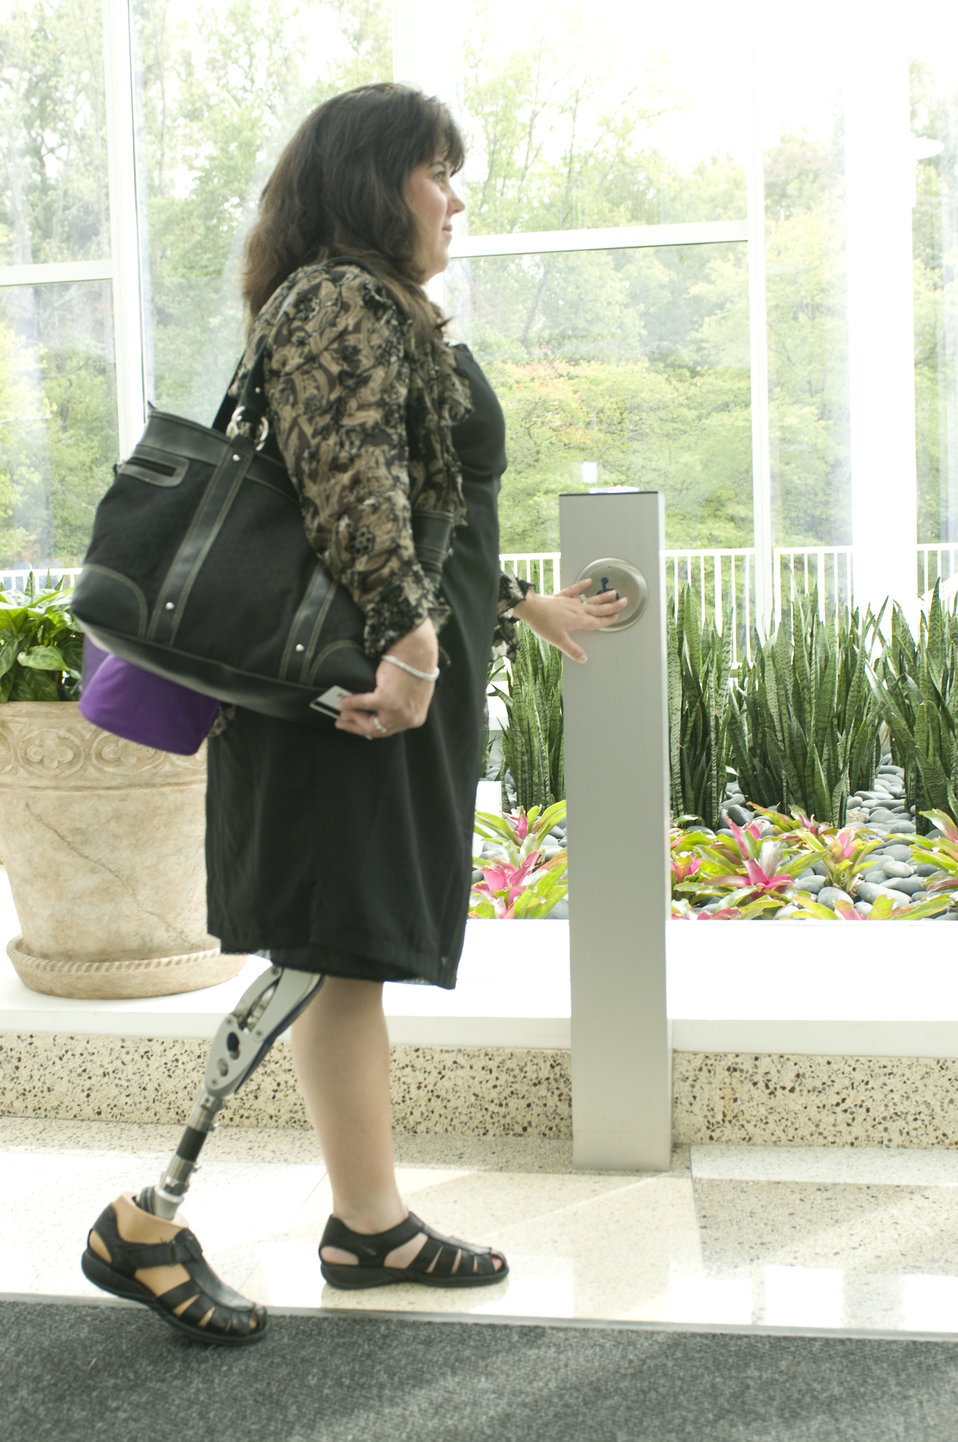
Having conducted her intended business inside a building located on one of the Centers for Disease Control and Prevention's (CDC) campuses, this woman, who was equipped with a right extremity fitted prosthesis, was about to leave the building, and had pressed the door-opening touch pad, which would open the mechanized door, thereby, allowing her to exit easily.